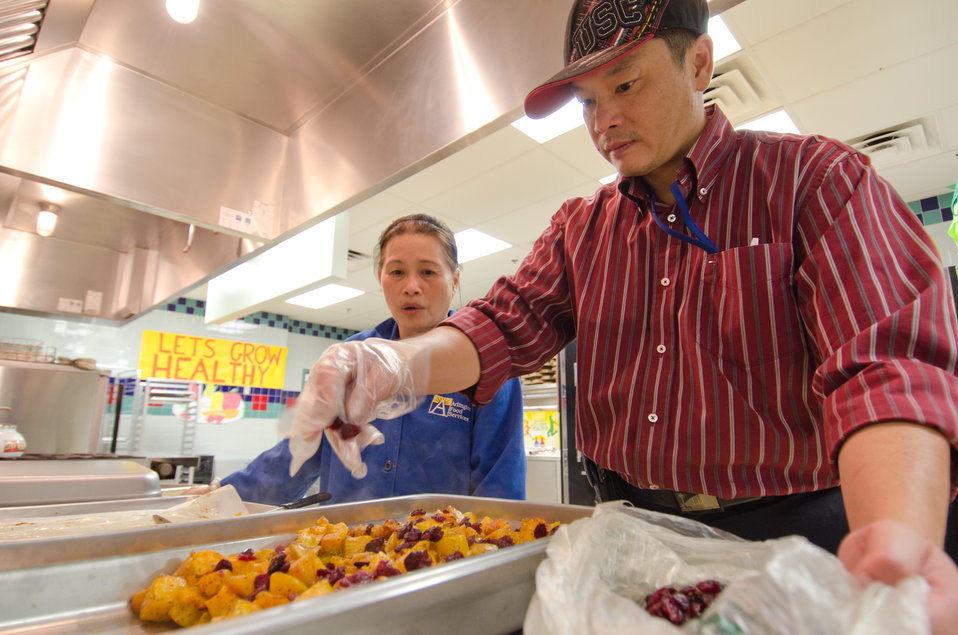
Arlington Public Schools, Food Services Specialist Thai Nguyen (r.) sprinkled dried cranberries on roasted butternut squash for the school lunch program at Nottingham Elementary School in Arlington, VA, on Wednesday, October 12, 2011. Today's menu included roasted chicken, roasted butternut squash with dried cranberries, farm fresh mixed lettuce salad, turkey wraps, pita wedges, hot muffins, carrots, pears and more.